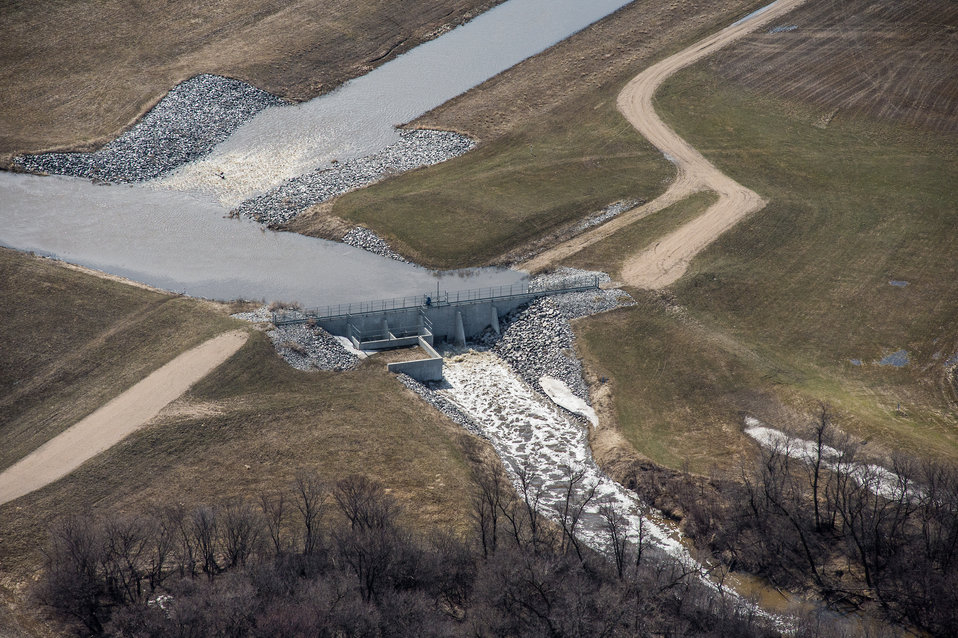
Snake River Diversion, a Public Law PL83-566 Small Watershed Program, at Warren, MN, on Wednesday, May 1, 2013. For information about this and other programs from the USDA Red River Basin Initiative (RRBI) please see www.mn.nrcs.usda.gov/news/features13/RRBI.html.